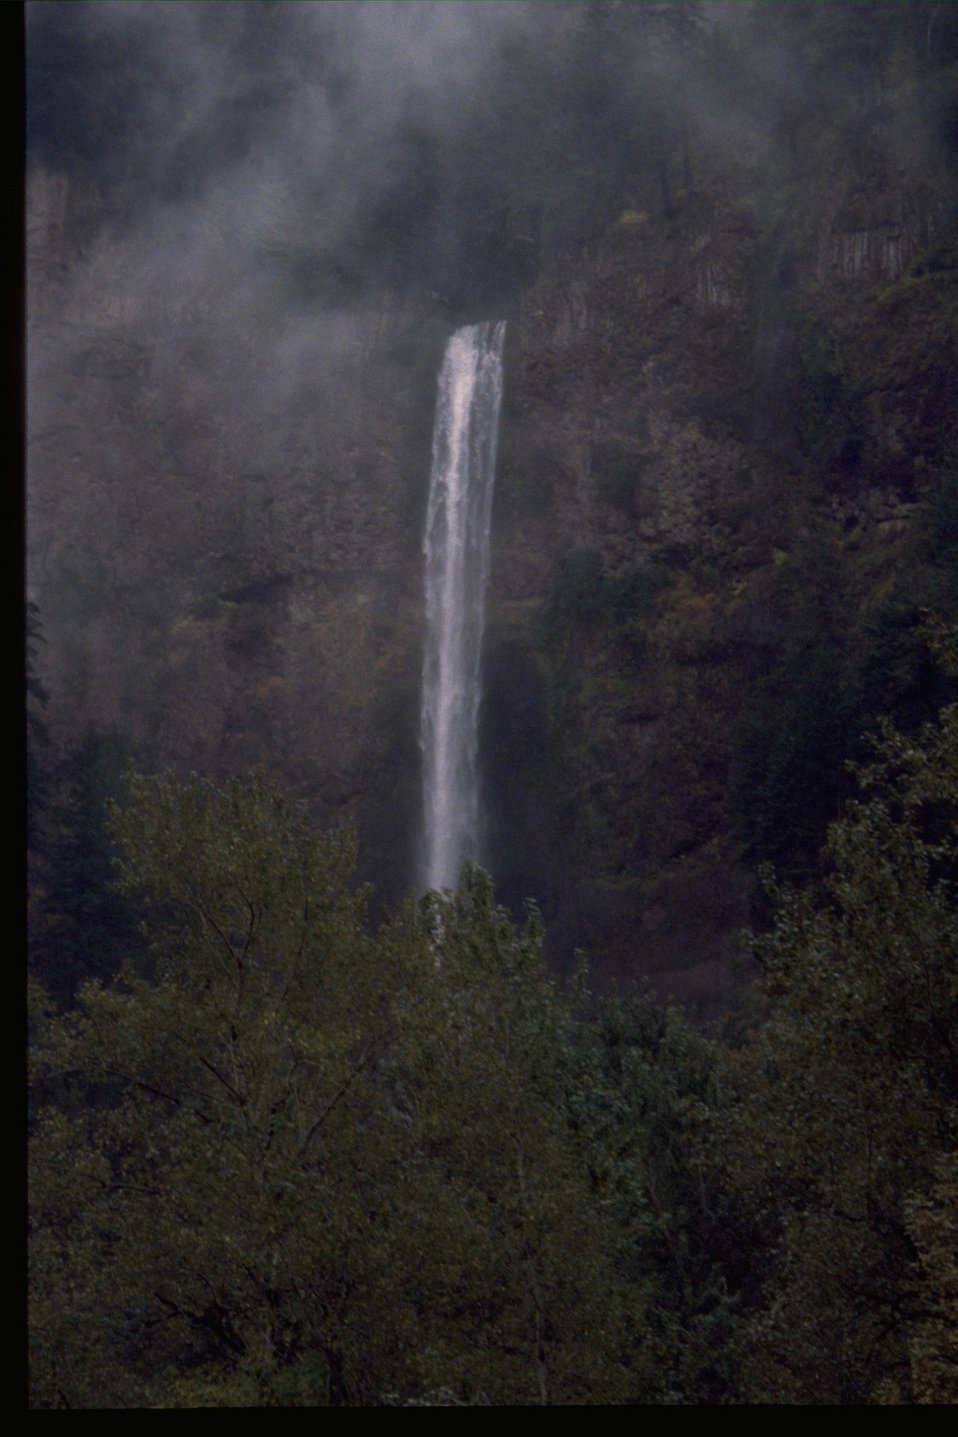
Forest waterfall in western Oregon.